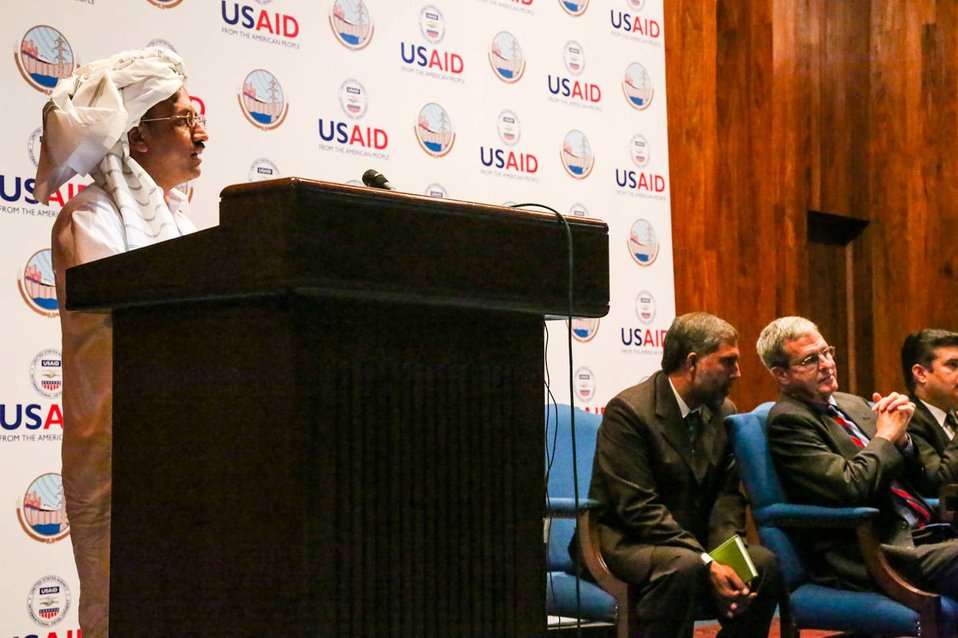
Islamabad, September 12, 2012 - Project Launch Ceremony of Waran Canal Irrigation System